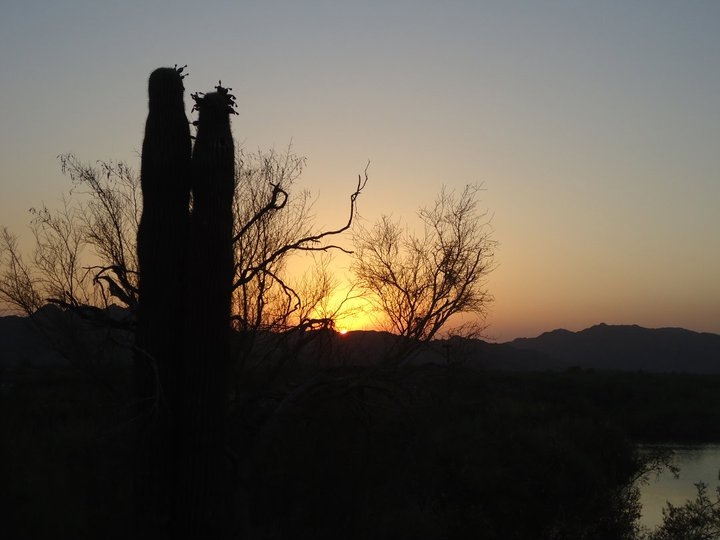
desert sunset

Imperial National Wildlife Refuge, AZ